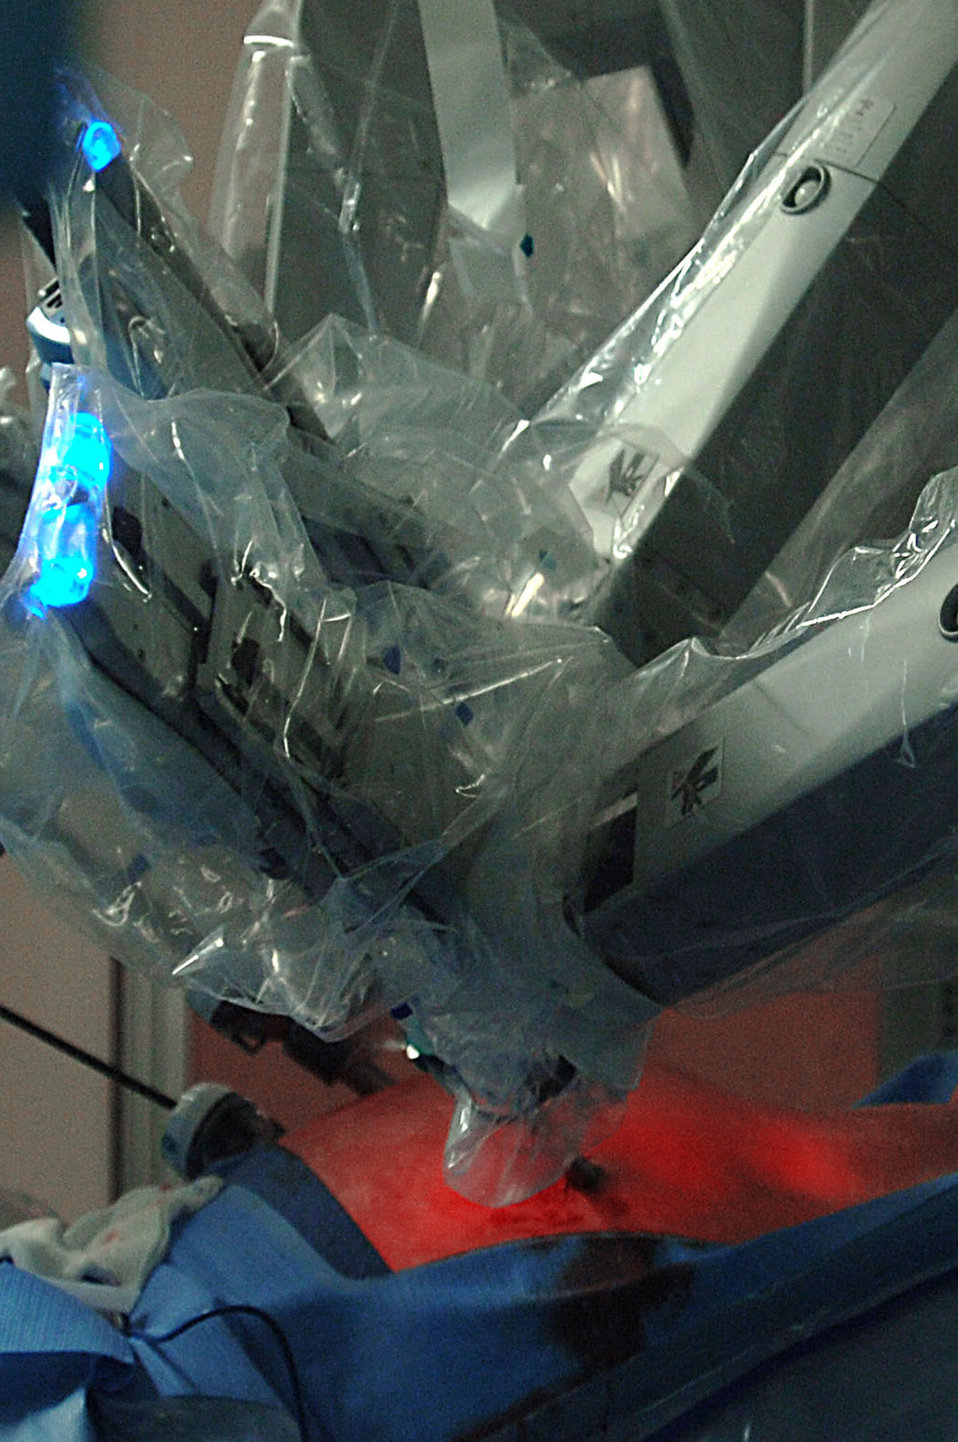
Doctor performs first robot-assisted surgery in the Air Force

A robot assists in a laparoscopic prostatectomy, or the surgical removal of prostate cancer, April 10 at Wilford Hall, Lackland Air Force Base, Texas. The robot converts the surgeon's hand movements into very precise movements of tiny instruments inside the patient. This was the first robot-assisted surgery in the Air Force, performed by Lt. Col. (Dr.) Kyle Weld, director of endourolog at the 59th Surgical Specialties Squadron.